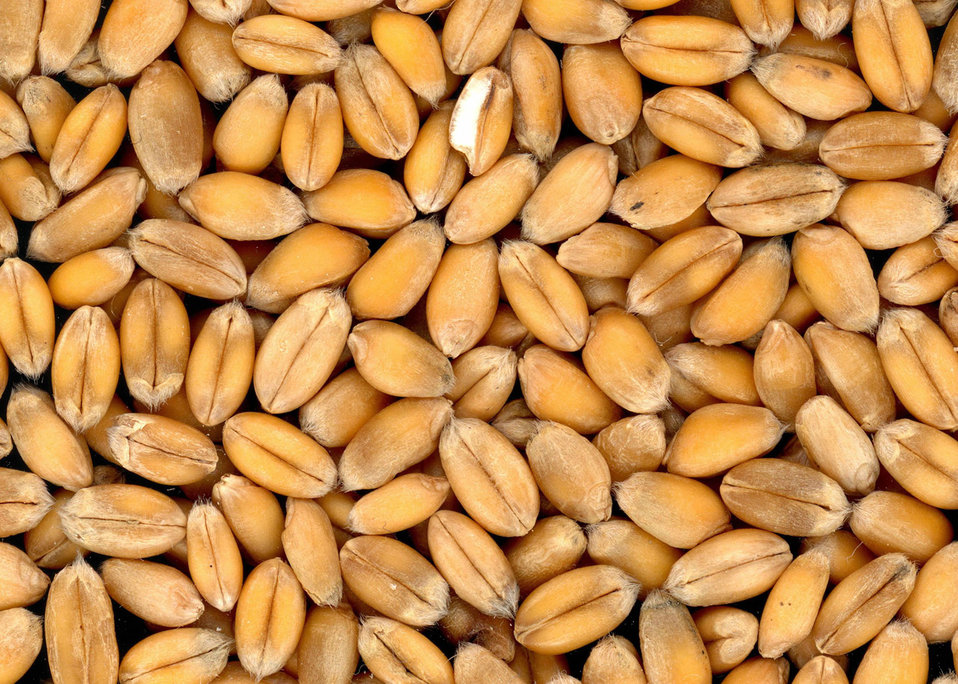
Wheat

Scan of wheat grains.